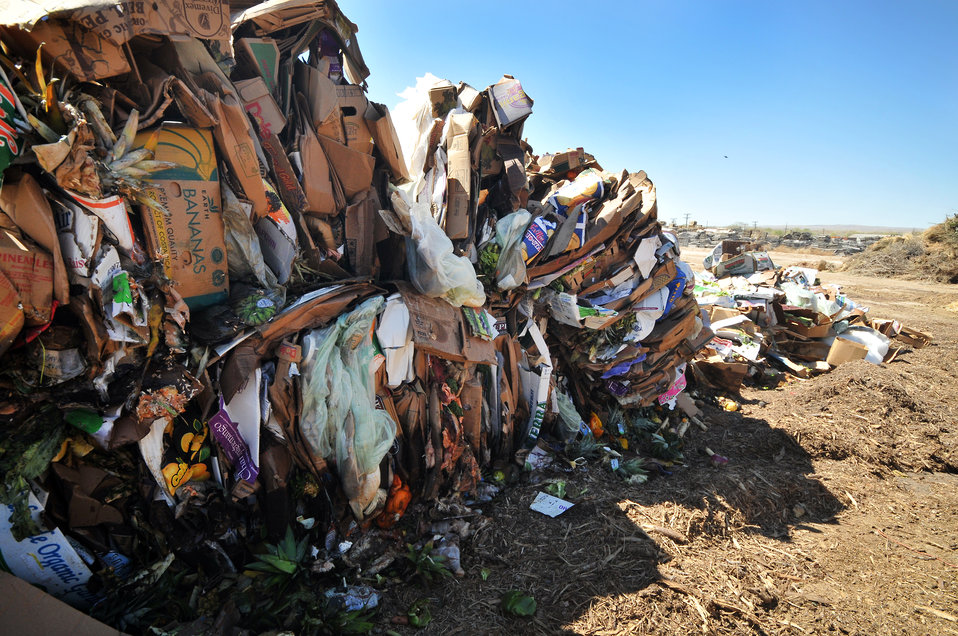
Over the next ear and a half, microbes will convert this garbage to usable topsoil and mulch.

The composting program began in March 2010 as a pilot to divert food preparation waste and leftovers from the regular waste stream that is sent to Rio Rancho's landfill to a local business that recycles food waste into useable and sell-able compost.